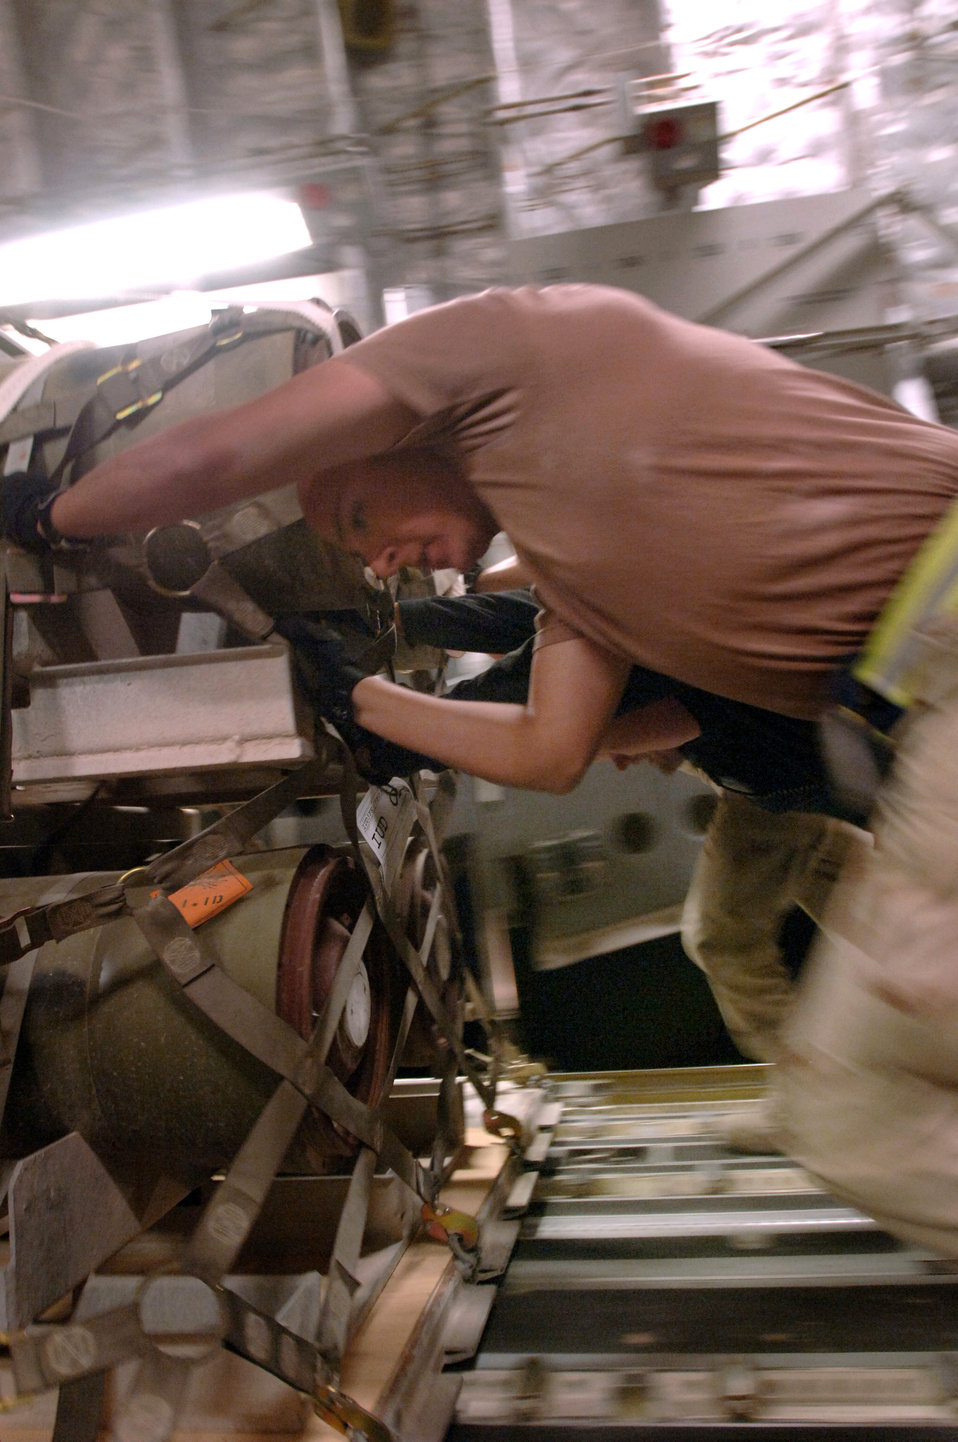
Aerial porters keep the Afghan missions moving

Airman 1st Class Arnold Pena, along with his crew of aerial porters, loads a pallet of bombs onto a C-17 Globemaster III. Approximately 2.1 million pounds of cargo are loaded per week. The Airmen are supporting, Operation Achilles, a campaign to create a secure environment and better quality of life for Afghan citizens. The aerial porters are assigned to the 8th Expeditionary Air Mobility Squadro in Southwest Asia.